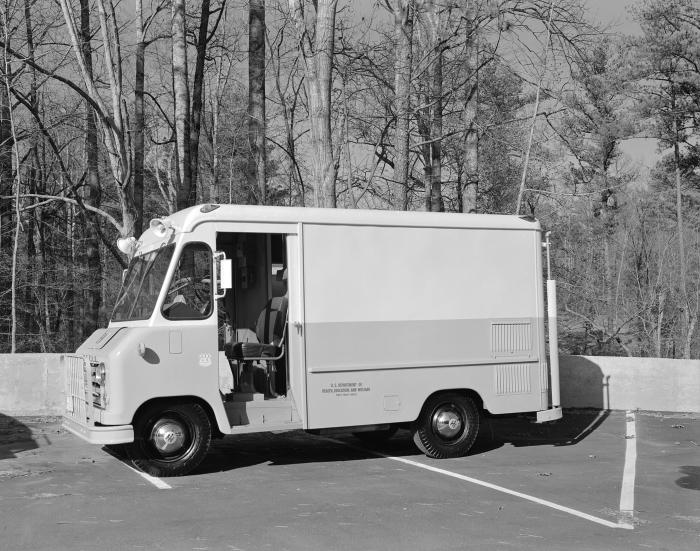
This historic 1964 photograph depicted the exterior of what was a Public Health Service (PHS) mobile laboratory.